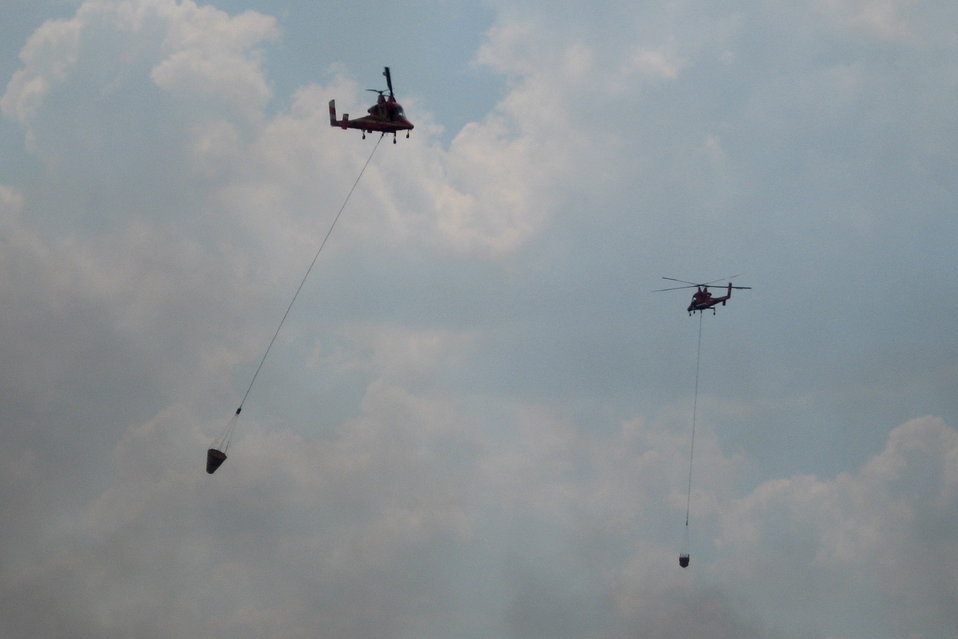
Helicopter show

Suffolk, VA, August 2011: Two helicopters work near a water dipping spot off Corapieake Ditch at the Lateral West Fire in Great Dismal Swamp.